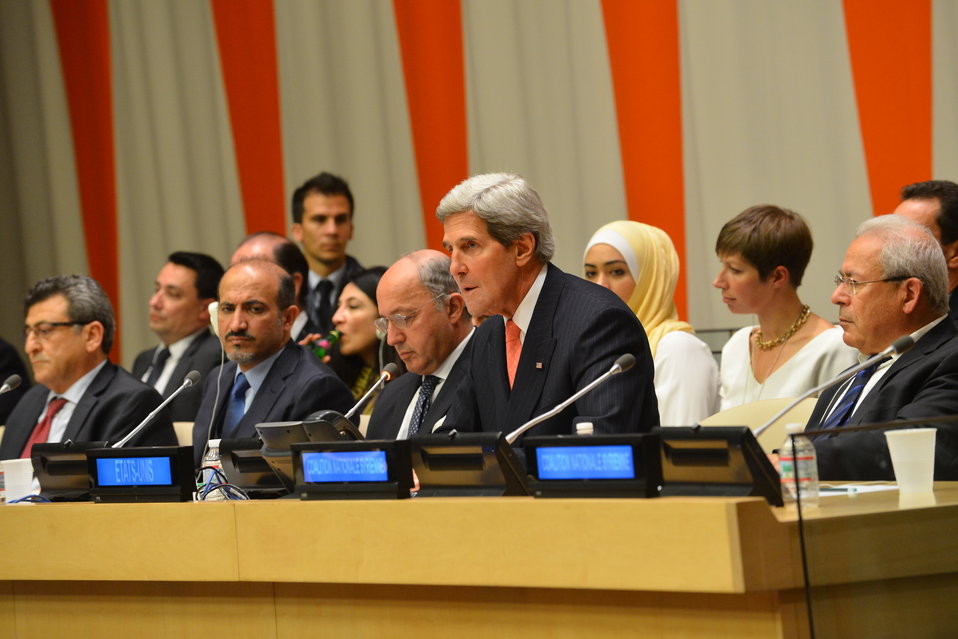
Secretary Kerry Attends the Friends of the Syrian People Ministerial

U.S. Secretary of State John Kerry participates in a Friends of the Syrian People Ministerial in New York City on September 26, 2013.